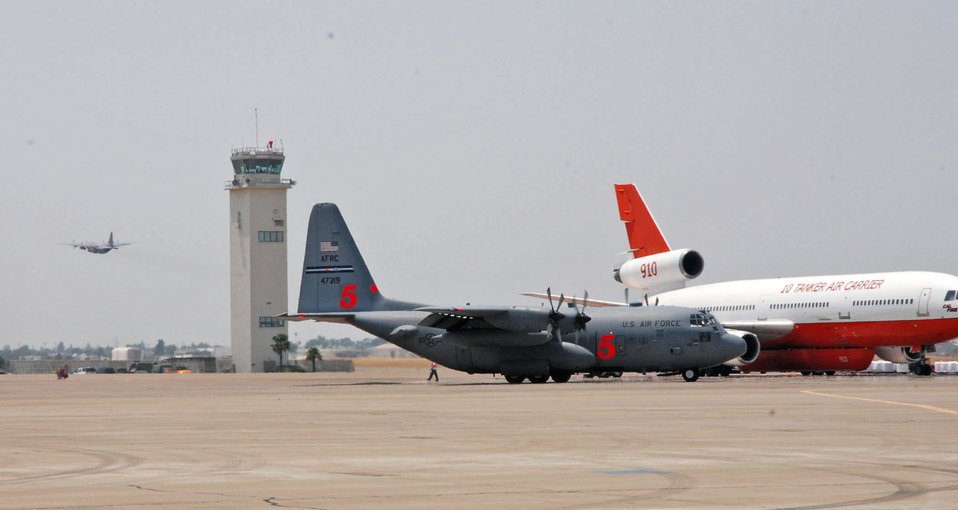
Third Reserve C-130 joins California wildfire fight

An Air Force Reserve Command C-130 Hercules taxies toward the runway as another C-130 launches for a firefighting mission June 29 at McClellan Airfield in Sacramento, Calif. The aircraft are deployed from the 302nd Airlift Wing, Peterson AFB, Colo., and assigned to the 302nd Air Expeditionary Group that is fighting the Corral and Piute fires in California. As of 2:30 p.m. June 29, aircrews launched eight missions against the fires, dropping 24,000 gallons of fire retardant. The 302nd AEG includes the 302nd AW, and two Air National Guard units from the 153rd Airlift Wing from Cheyenne, Wyo., and the 145th Airlift Wing from Charlotte, N.C.